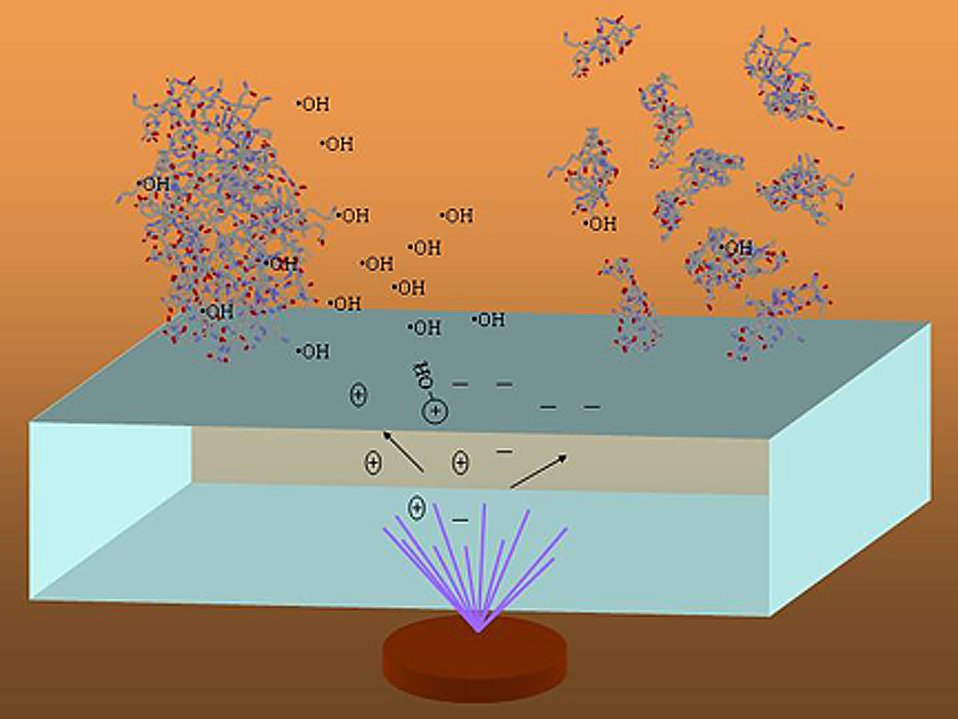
Titanium Dioxide

Illustration of the cleavage of proteins near a titanium dioxide surface: when illuminated with ultraviolet light, hydroxyl radicals are formed in water near the semiconductor's surface and cut proteins at the location of the amino acid proline.